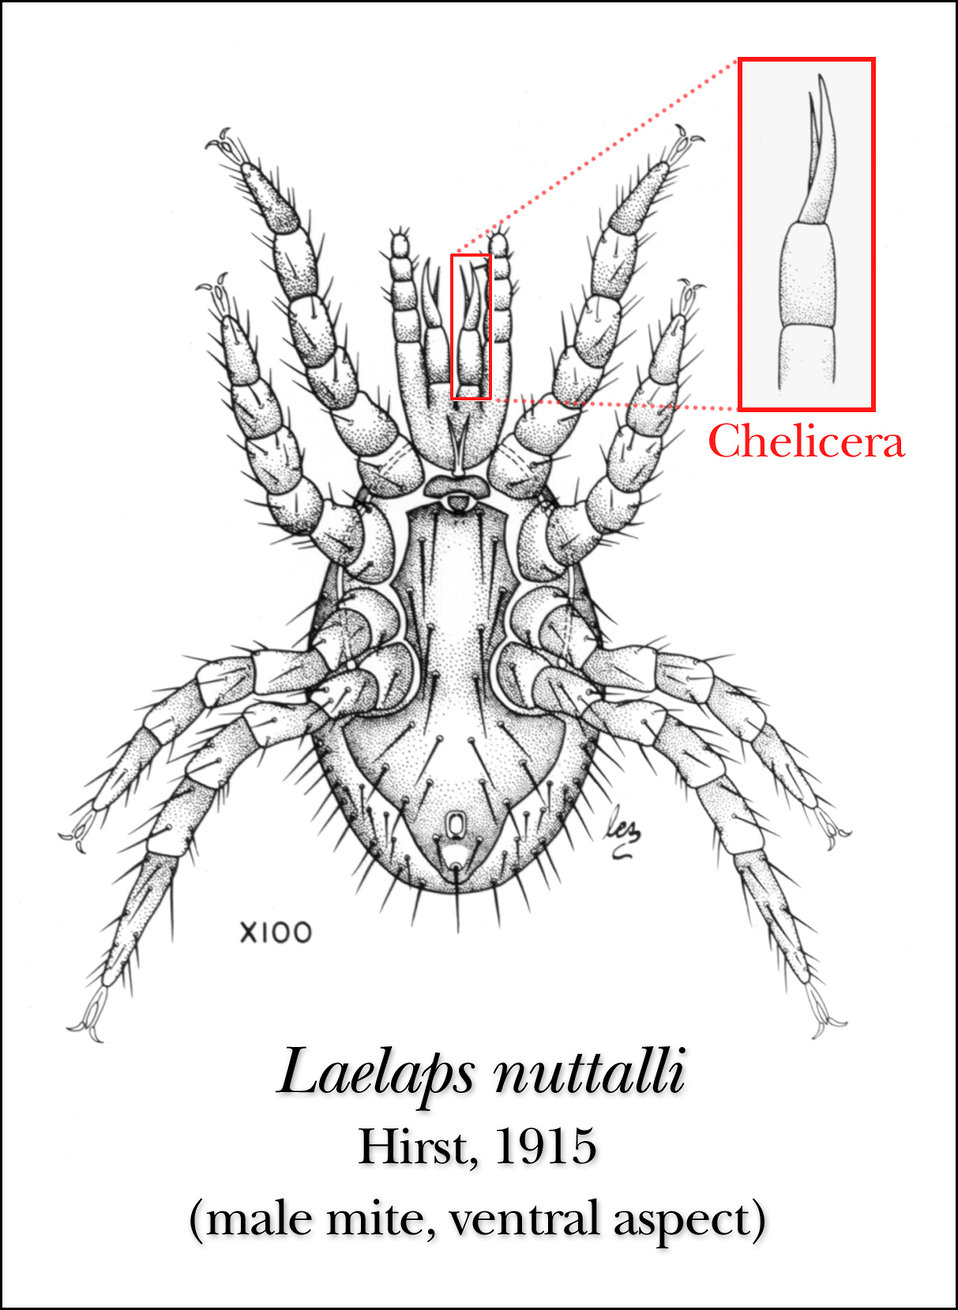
This illustration reveals the morphologic characteristics on the ventral surface of the male mite Laelaps nuttalli.